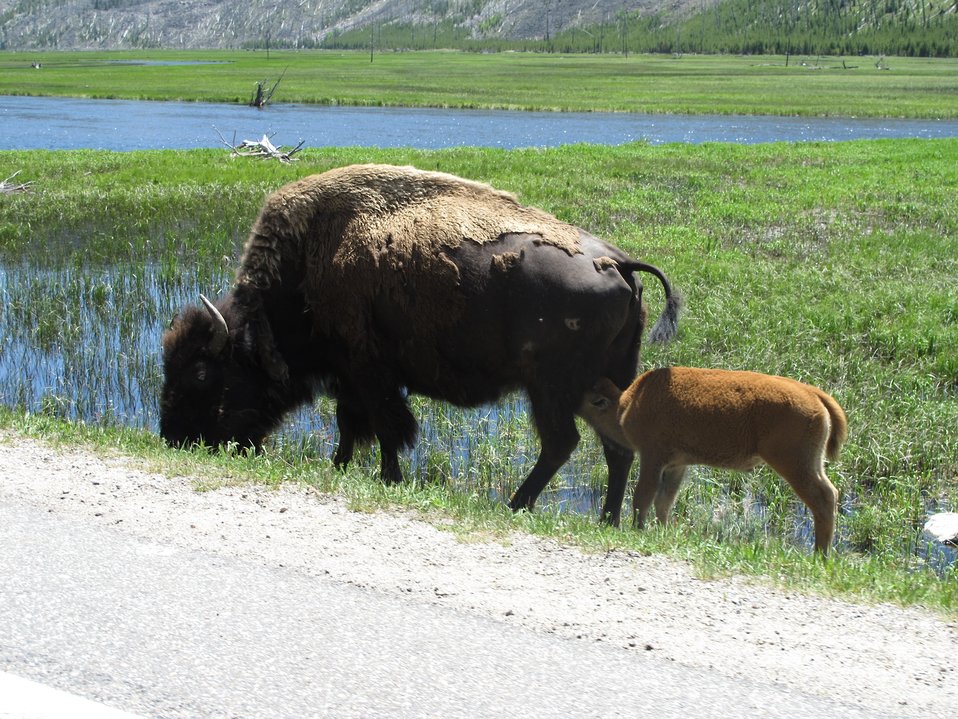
Bison seen at Yellowstone